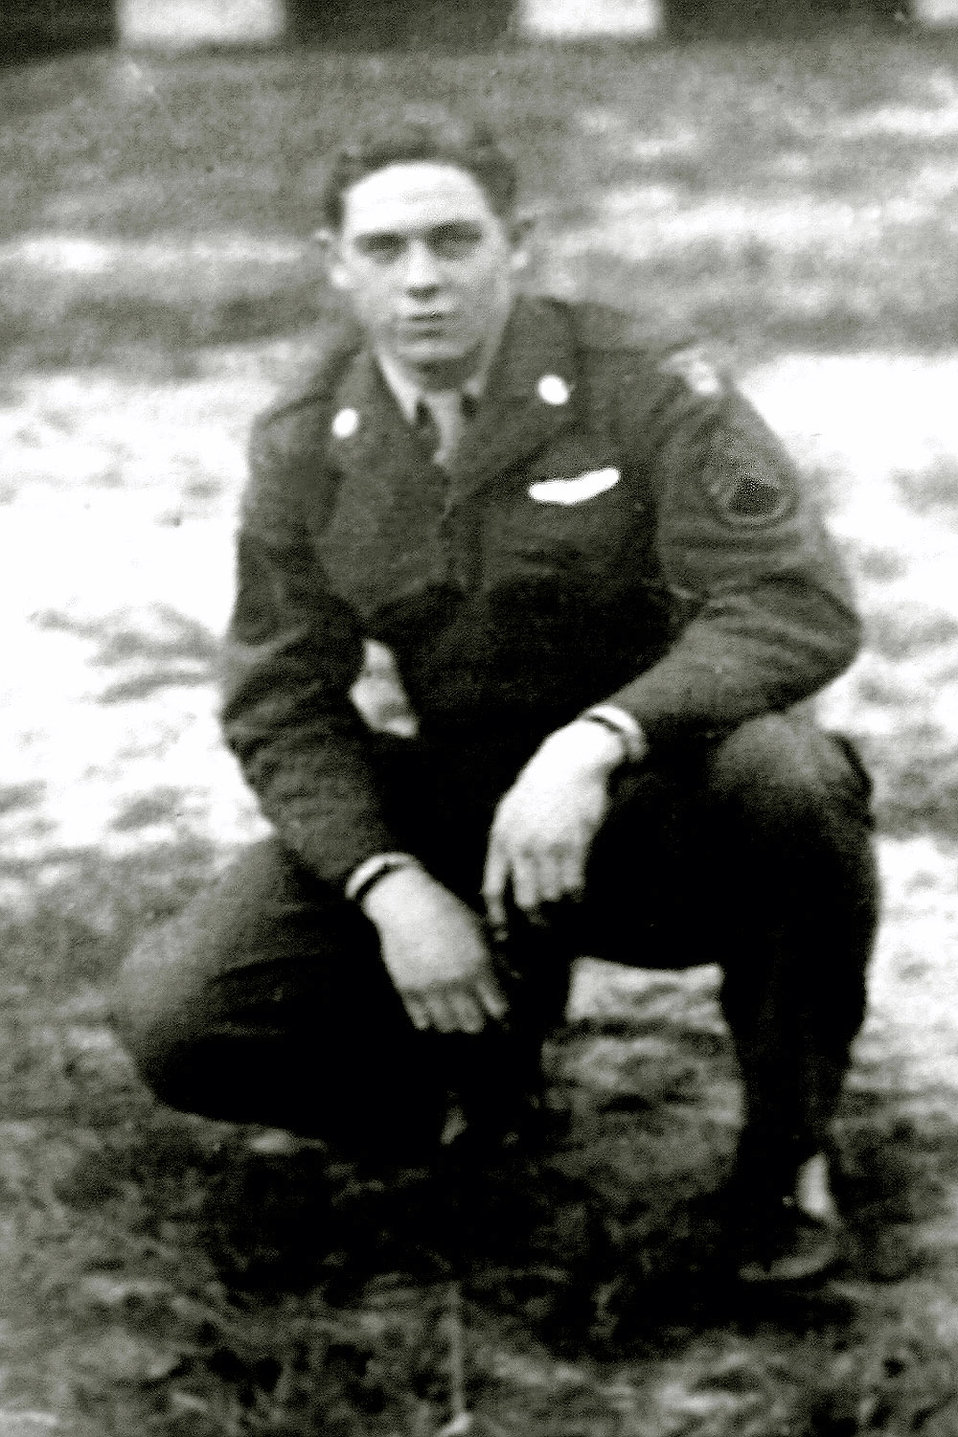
Berlin Airlift

Staff Sgt. Dub Southers poses outside a Celle Air Base barracks during a break in his Berlin Airlift duties.